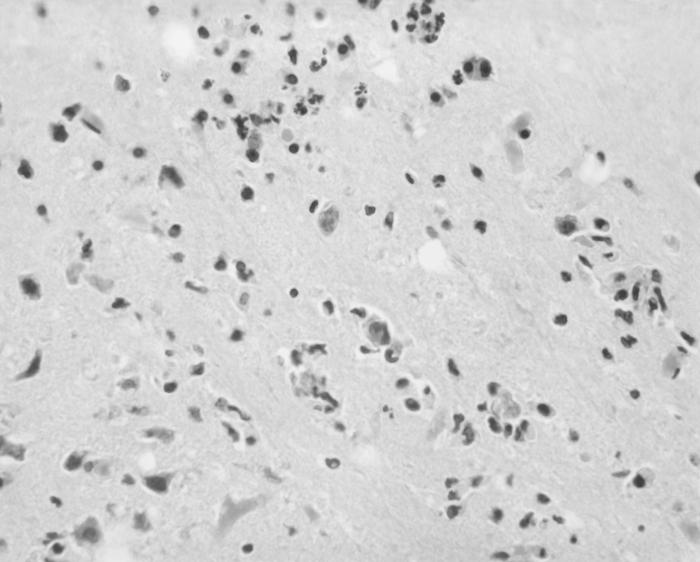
Magnified 500X, this 1973 photomicrograph depicted a mouse brain tissue specimen stained using the hematoxylin and eosin (H&E) staining technique, revealing the presence of Acanthamoeba polyphaga protozoa.Acanthamoeba is a microscopic, free-living ameba commonly found in the environment that can cause rare but severe illness. Acanthamoeba causes three main types of illness involving the eye (keratitis), the brain and spinal cord (Granulomatous Amebic Encephalitis), and infections that can spread from an entry point to the entire body (disseminated disease).